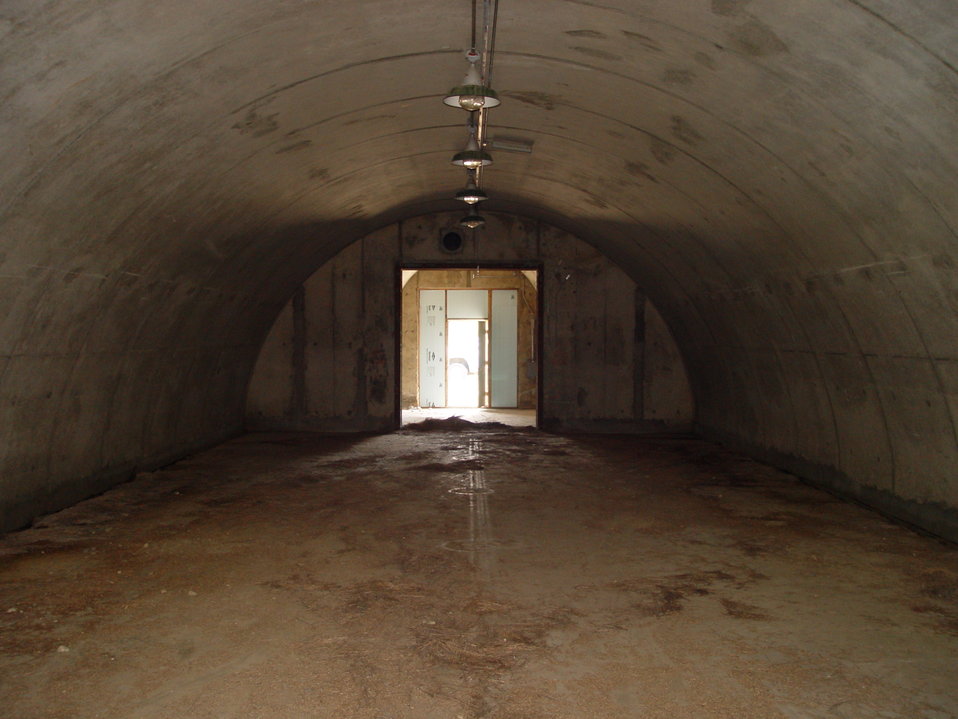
Interior of bunker before modifications

Interior view of bunker before modifications were made to provide roosting substrate